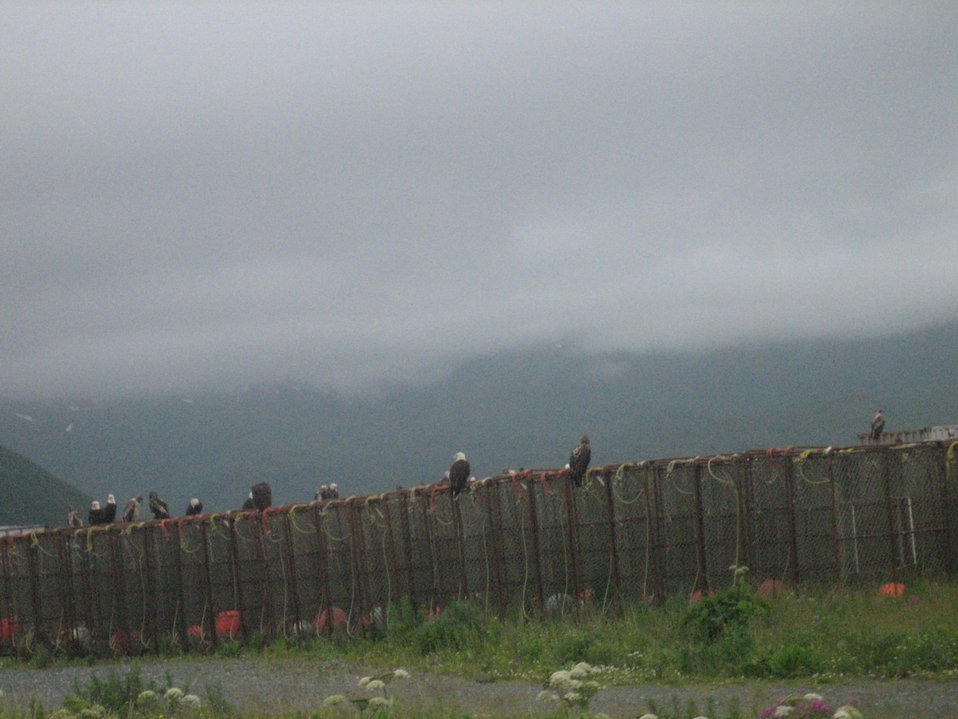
Looks like a good home for lazy eagles picking fish remains off drying nets.